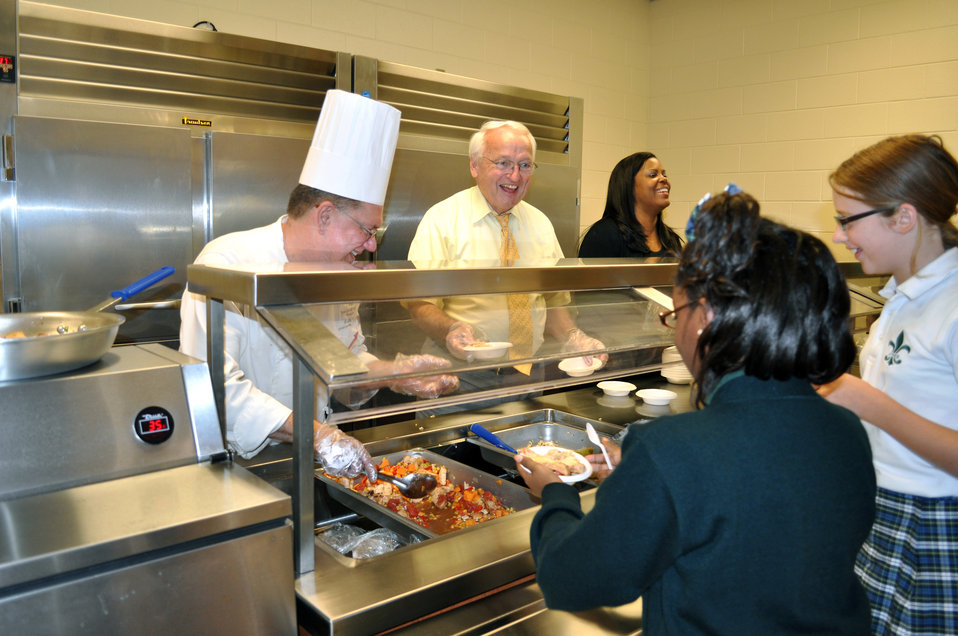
Agriculture Under Secretary Kevin Concannon looks on as Chef Keith Faulkner serves Stir-Fry Fajita chicken, squash and corn to students at Hynes Charter School in Louisiana on Aug. 20, 2012. Students can expect healthier and more nutritious food in school due to the passage of the Healthy, Hunger Free Kids Act. This Act enables the U.S. Department of Agriculture’s (USDA) Food Nutrition Service (FNS) to nationally advance major improvements by transforming school food and promoting better nutrition and reducing obesity.